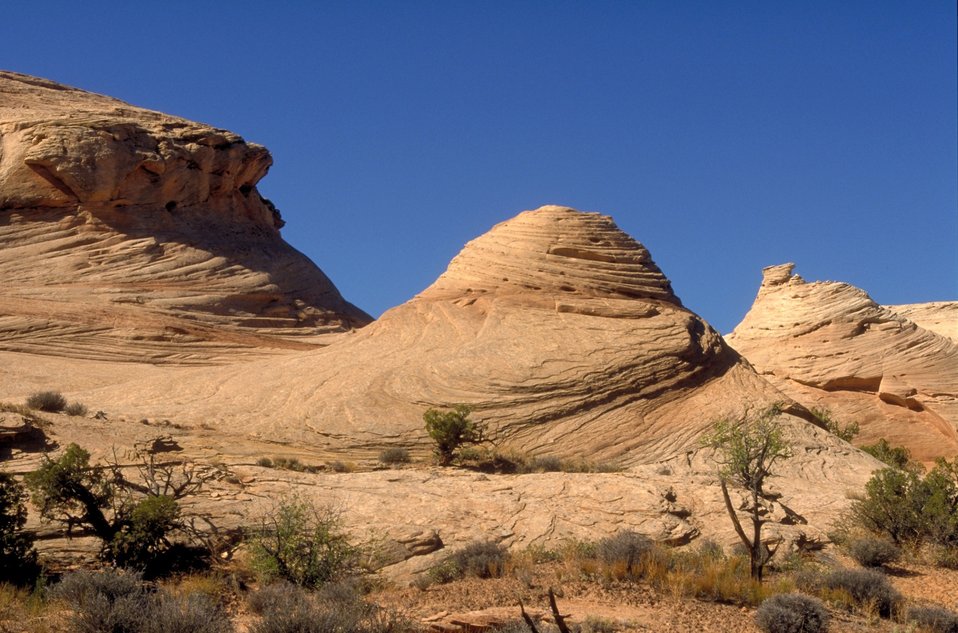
Slickrock formations near the head of Spring Canyon near Moab, Utah.